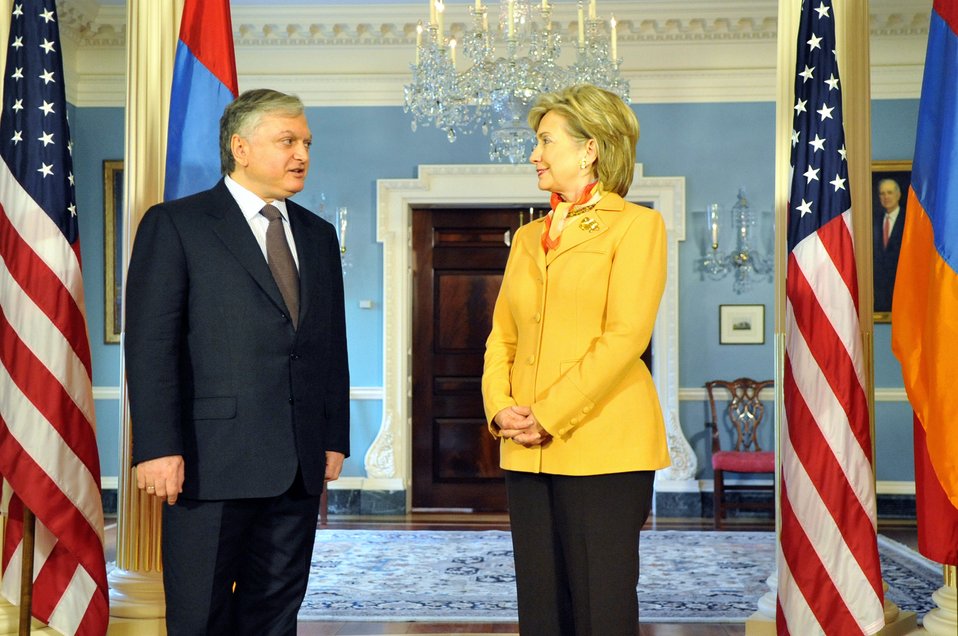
Secretary Clinton Meets With Armenian Foreign Minister

U.S. Secretary of State Hillary Rodham Clinton hosts a bilateral meeting with Armenian Foreign Minister Edward Nalbandian in the Treaty Room of the U.S. Department of State in Washington, DC May 5, 2009.